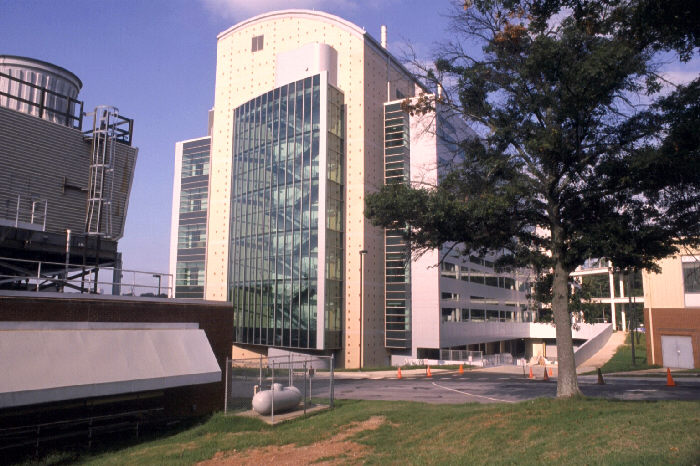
CDC Building 17, Roybal Campus.